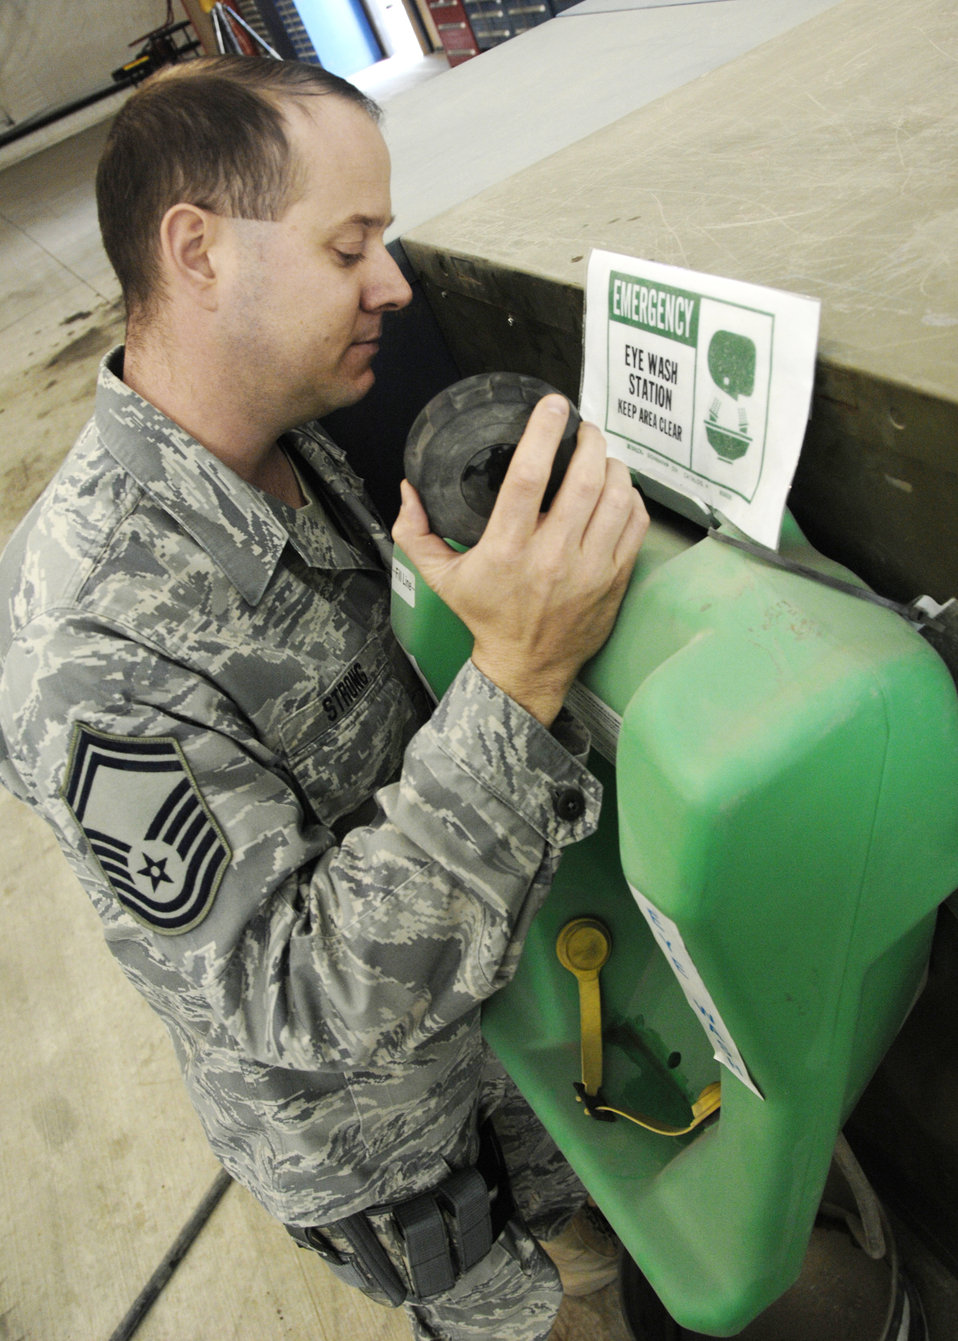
Kandahar Airmen focus on safety

Senior Master Sgt. Bruce Strong Jr. inspects an eyewash station to ensure all standards are being met Dec. 5, 2009, at Kandahar Airfield, Afghanistan. Sergeant Strong is a ground safety manager for the Air National Guard in Maryland.